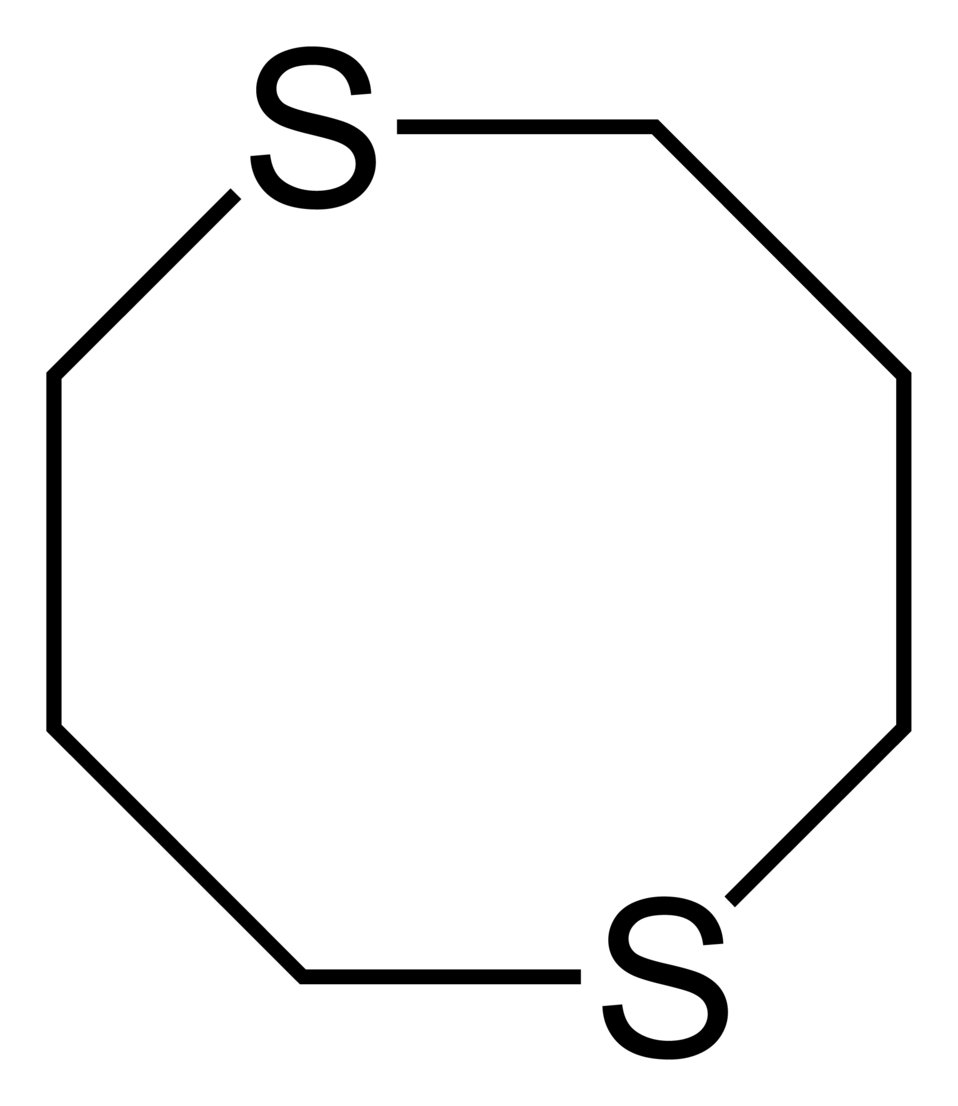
Skeletal formula of the 1,5-dithiocane molecule, C6H12S2.